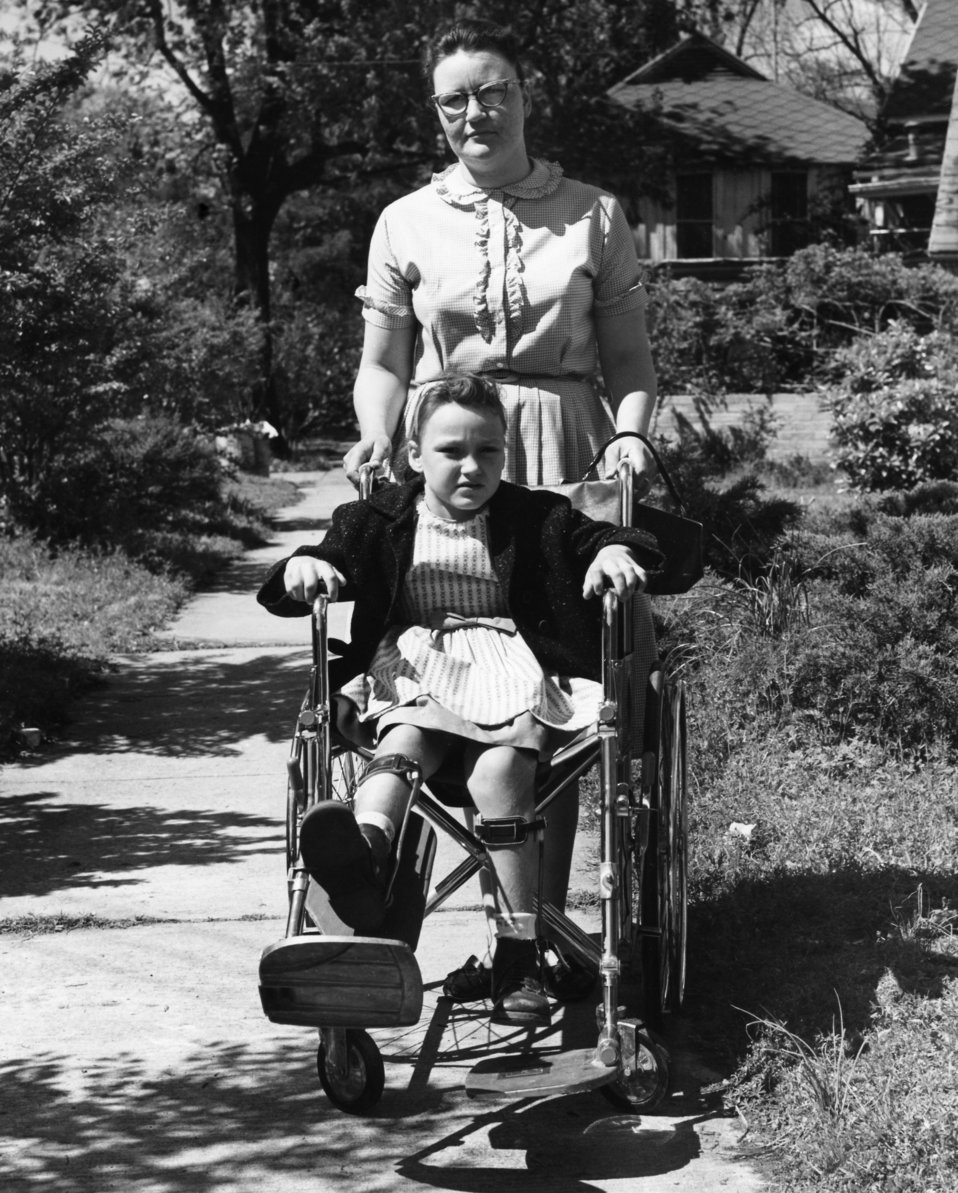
Images like this were used to encourage individuals to receive polio vaccinations, which were made available in April, 1955. Thanks to the successful nationwide immunization program, parents today can rest easy knowing that polio is a preventable viral infection that is only rarely seen today.